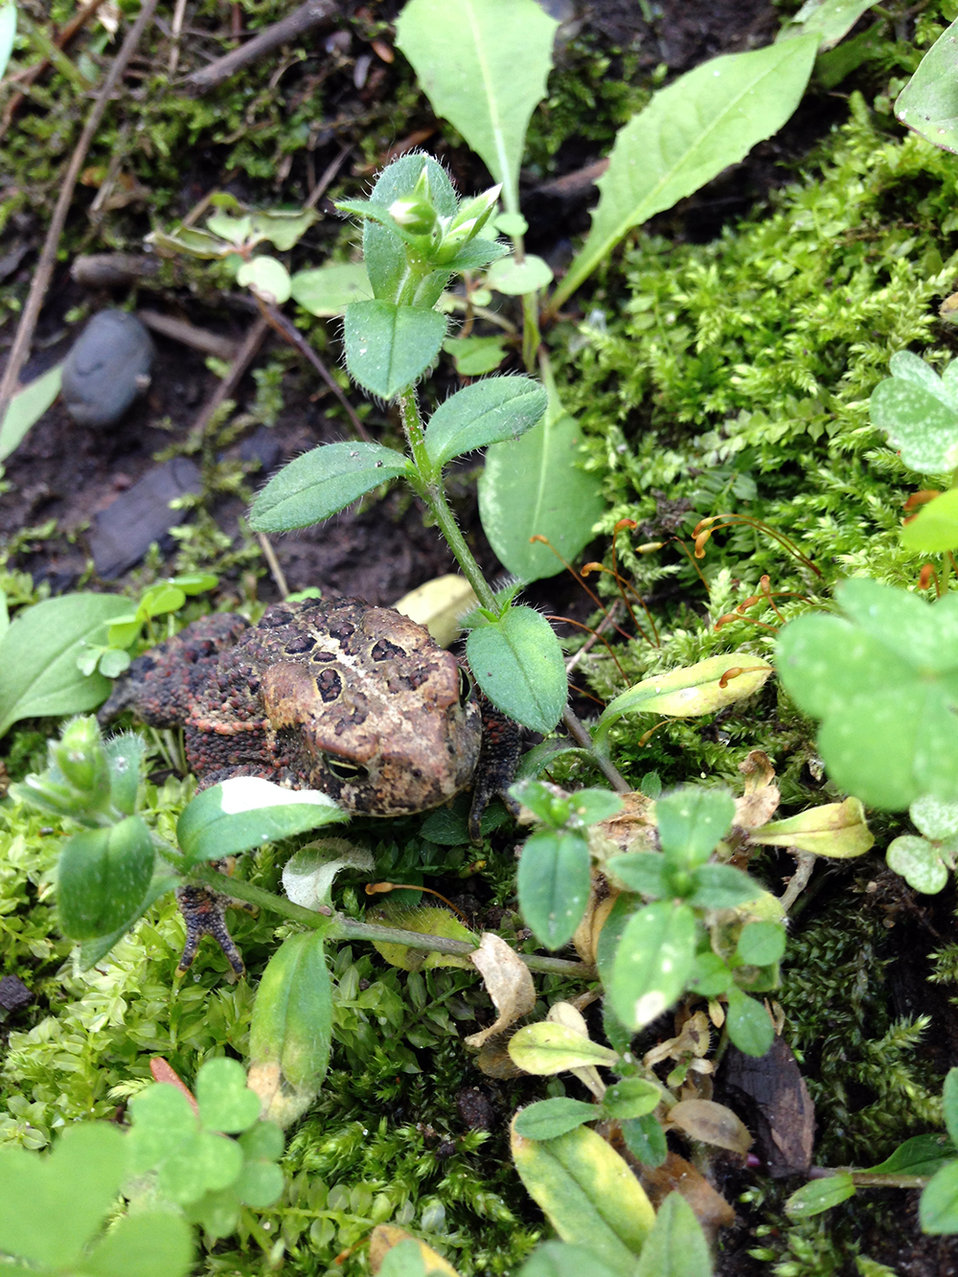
Toad